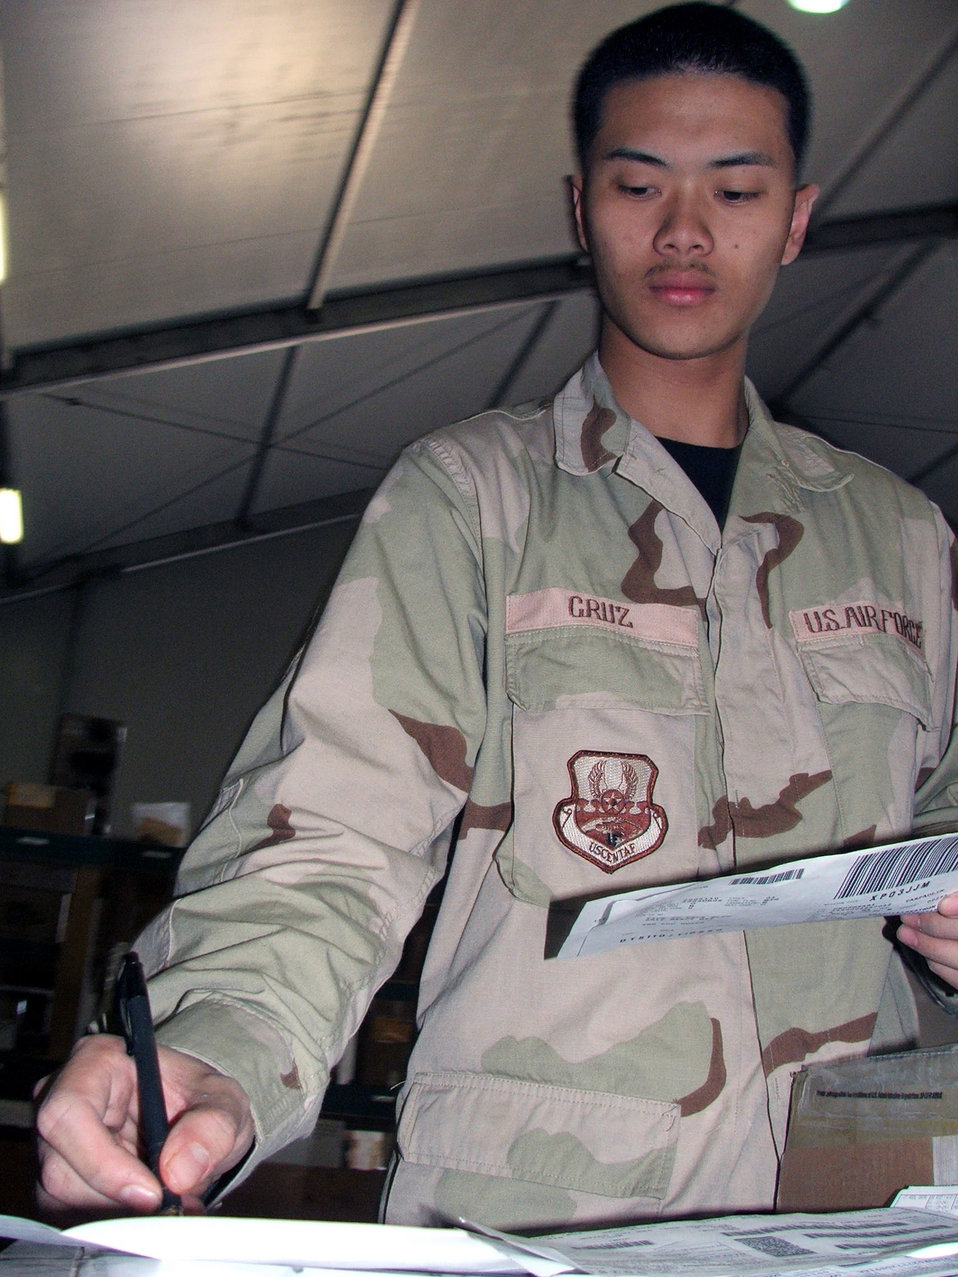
Expeditionary supply technicians order up success

KARSHI-KHANABAD AIR BASE, Uzbekistan -- Senior Airman Aaron Cruz checks in cargo in the supply warehouse here April 26. He is assigned to the 416th Expeditionary Mission Support Squadron's supply section and is deployed from Grand Forks Air Force Base, N.D.